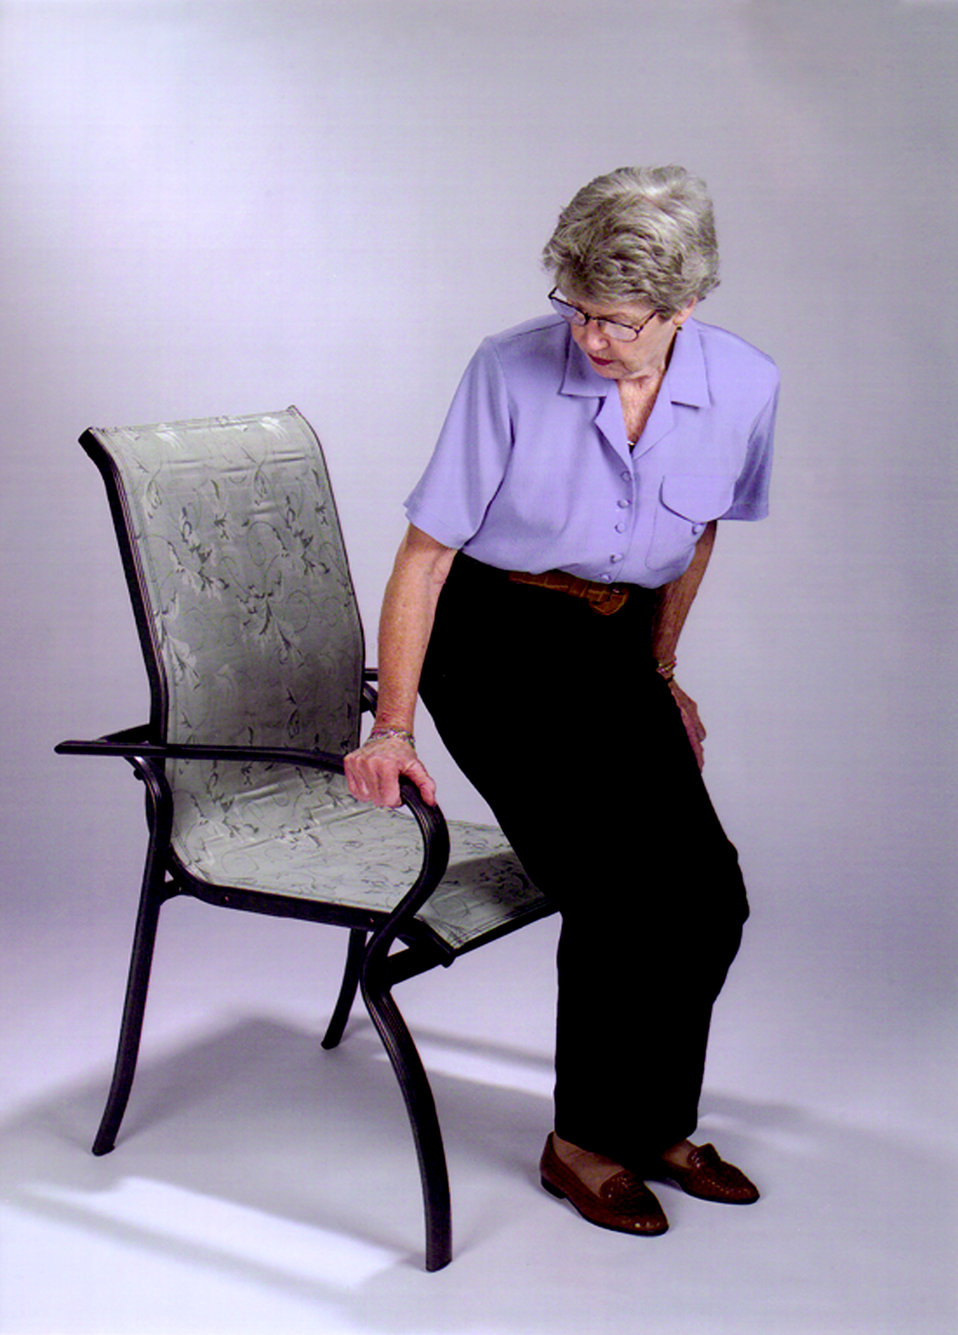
This is one of a series of ten images, (PHIL# 9144 - 9153), depicting one of LifeSpan� Furnishing's line of chairs, designed to make sitting down and rising safer and easier, and sitting more comfortable and supportive. An elderly woman was in the process of sitting down, and was using the chair arms to stabilize this activity. These chairs combined aesthetics and function, and were more comfortable for most people, benefiting those who would care for others, by reducing physical exertion and stress needed when assisting others. The user could take advantage of the extended arms for stability when lowering or rising from a seated position. Close attention was paid to many small details including the non-skid rubber feet, and the elimination of pinch points and sharp edges. The LifeSpan� seating product line included four different designs, all based on an extended arm and leg concept that provided users with better leverage and support.